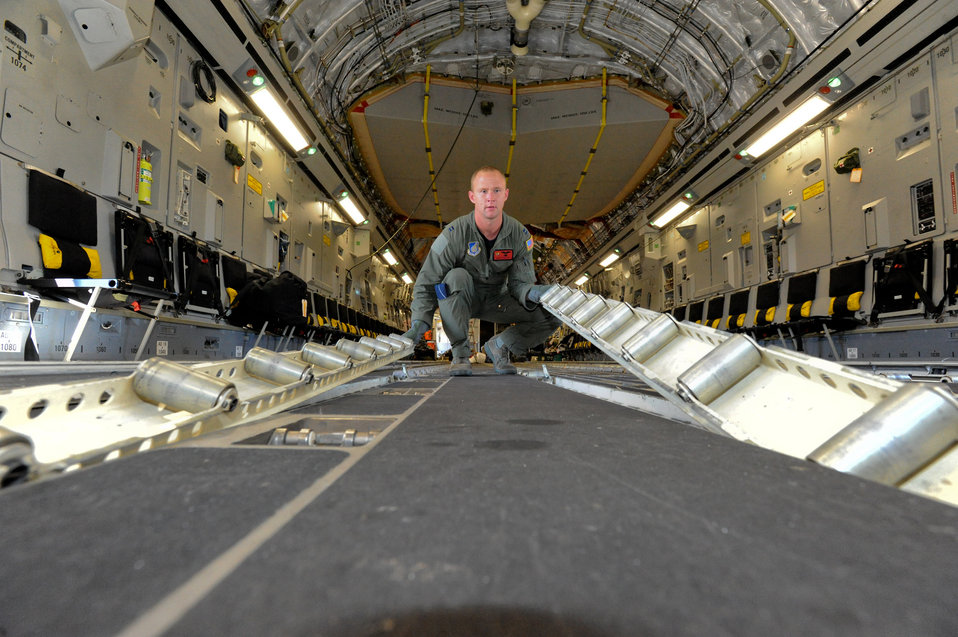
Presto, change-o!

Capt. Mark Fischer converts the floor of a C-17 Globemaster III to rollers Oct. 14, 2010, at Fort Benning, Ga. Captain Fischer is a pilot with the 535th Airlift Squadron from Joint Base Pearl Harbor-Hickam, Hawaii. The C-17 made the long journey to support the student jump requirements of the 507th Airborne School.